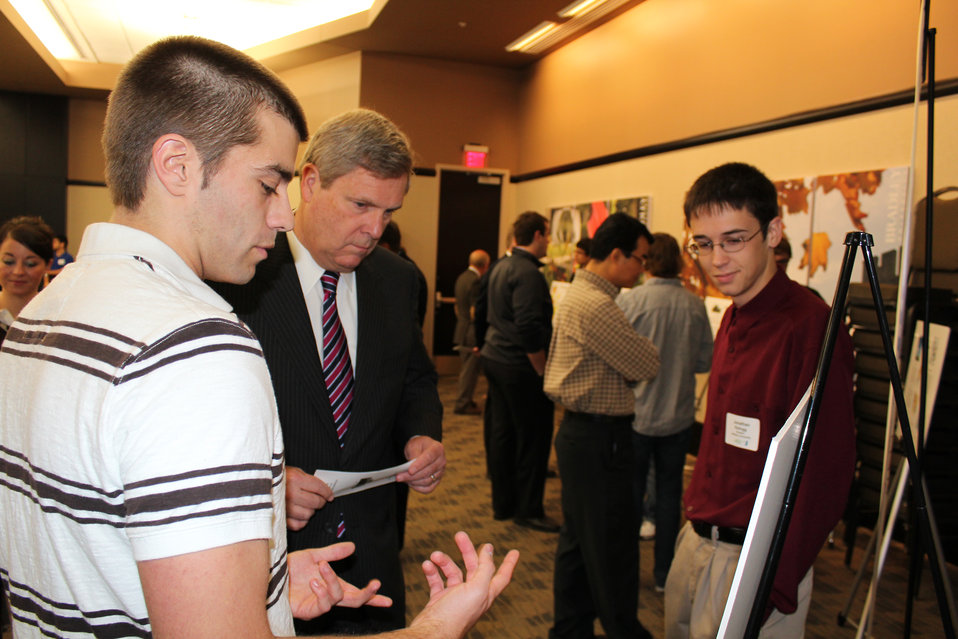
Agriculture Secretary Tom Vilsack (center) visits with Bradley University engineering students, Andrew Gialamas (left) and Jonathan Kellogg about their about his project.at the Future of Midwest Agriculture and Environmental Sustainability symposium on Thursday, Nov. 3, 2011, at Bradley University in Peoria, IL.